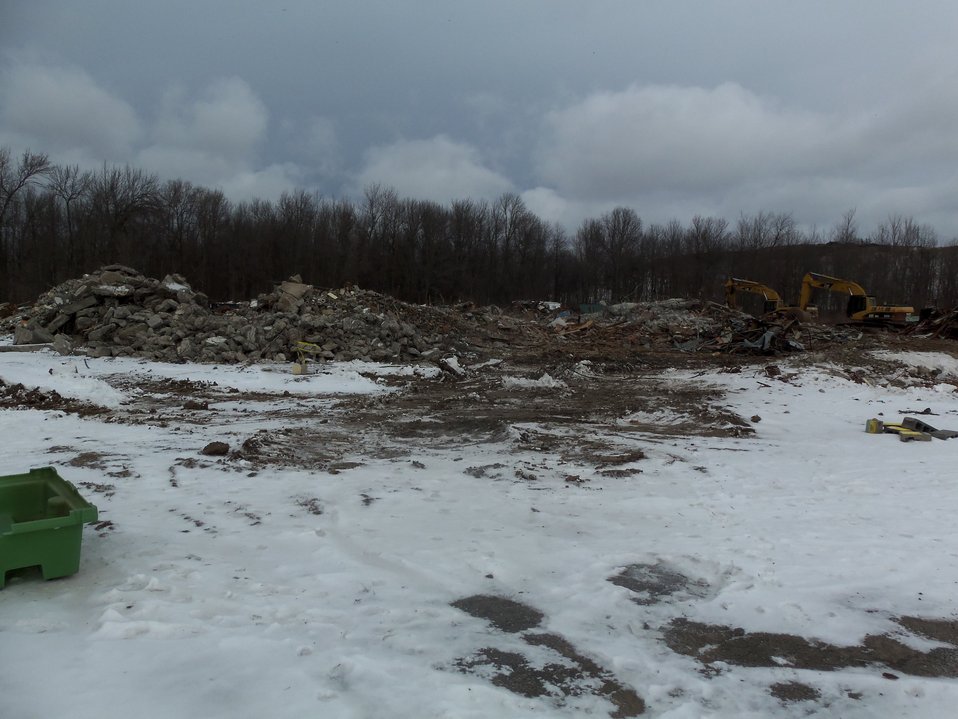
Building 401 concrete debris.

Activities from the Niagara Falls Storage Site, which is associated with the former Lake Ontario Ordnance Works. Formerly Utilized Sites Remedial Action Program (FUSRAP), a program initiated in 1974 to identify, investigate and clean up or control sites that were part of the Nation's early atomic energy and weapons program. Activities at the sites that are eligible for FUSRAP were conducted by Manhattan Engineer District (MED) or the Atomic Energy Commission (AEC), both predecessors of the Department of Energy (DOE). The U.S. Army Corps of Engineers was assigned management of FUSRAP by Congress in 1997.